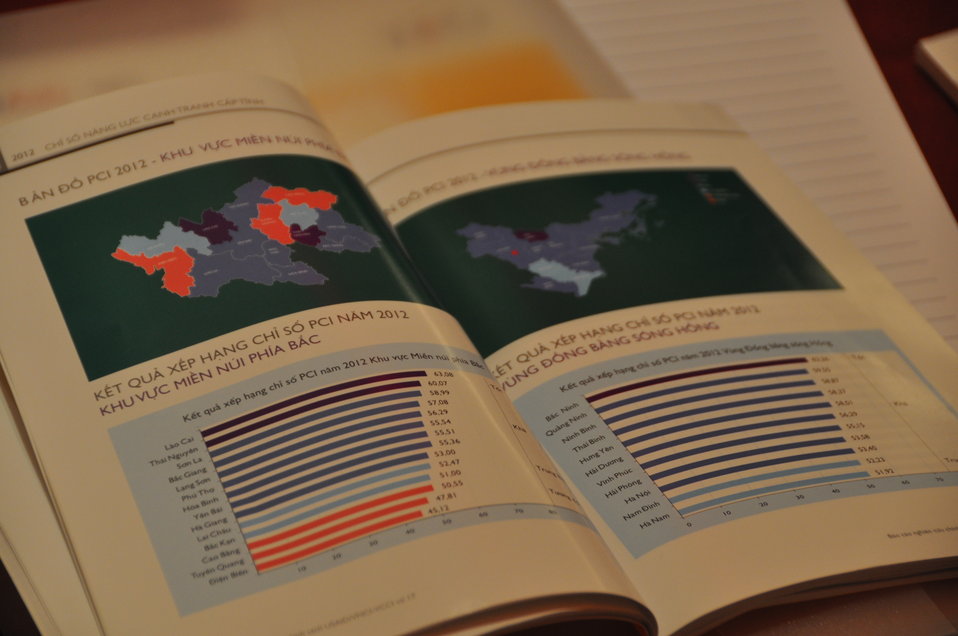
Provinicial Competitiveness Index Launch, March 14, 2013

Hanoi, March 14, 2013